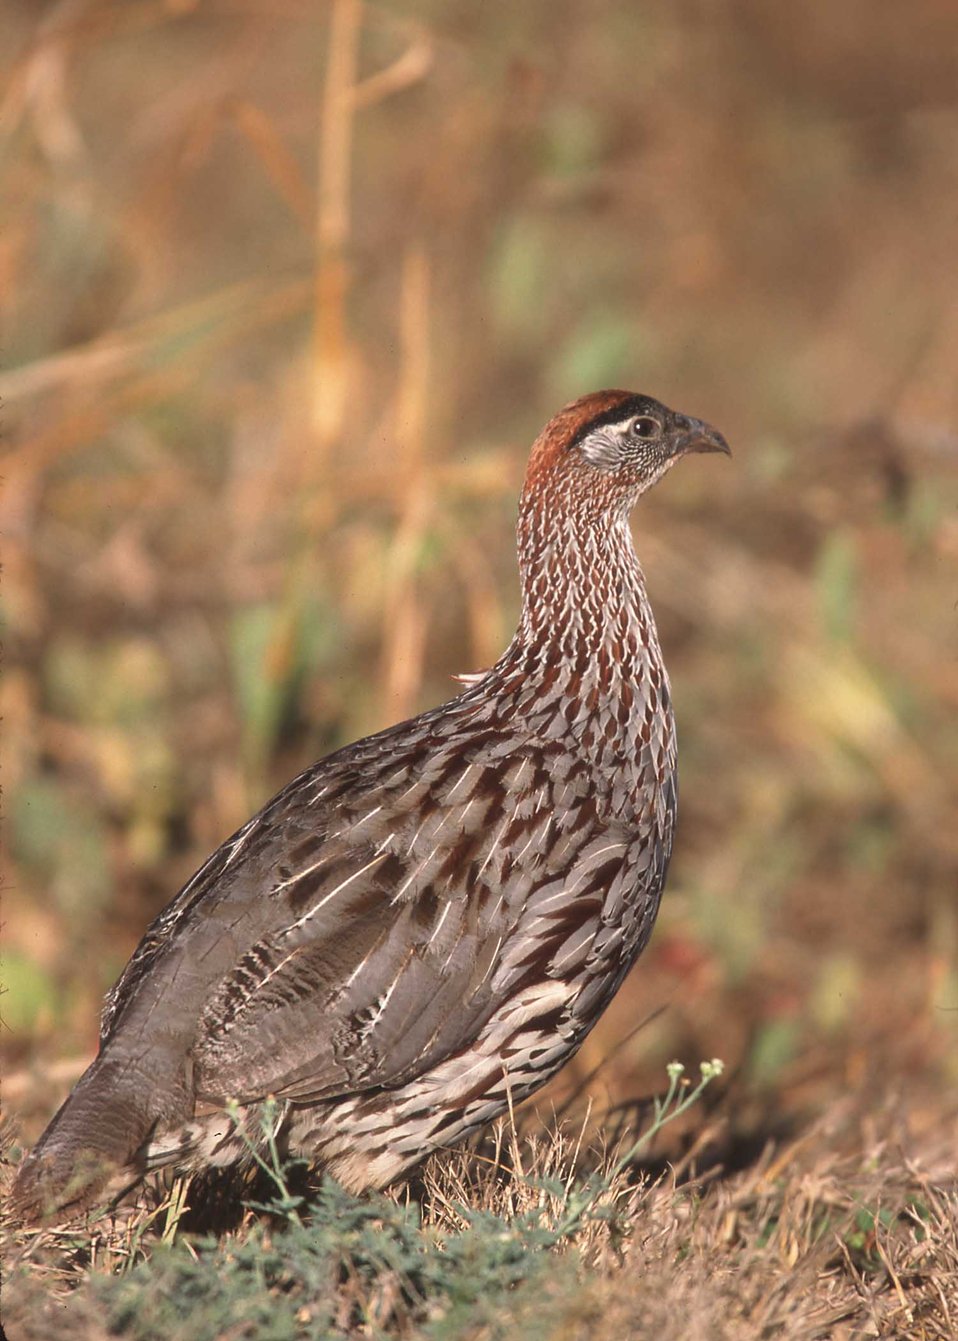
Gray Francolin.